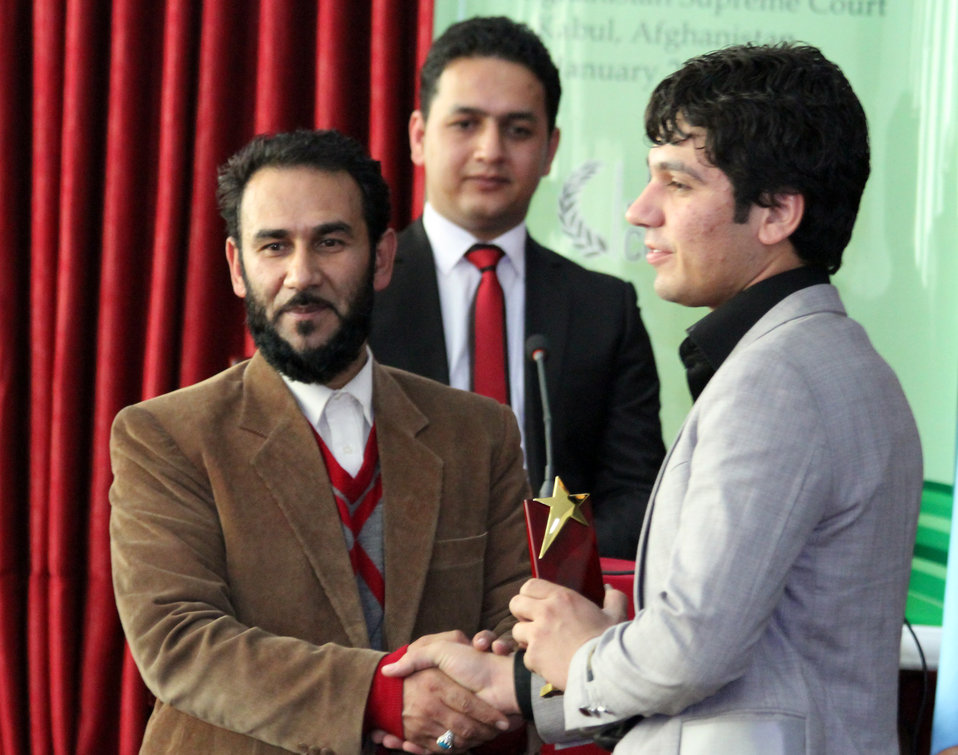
Afghanistan Final National Round of the 2013 Philip C.Jessup International Law Moot Court Competition